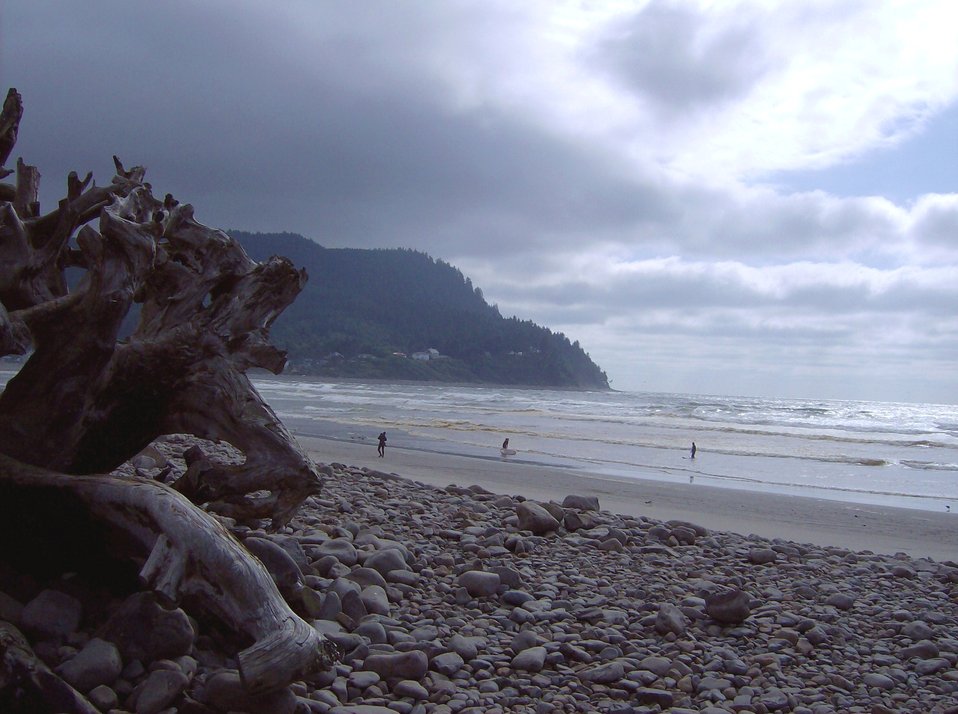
Driftwood, cobbles, surfers (crummy surf) and a beautiful headland at Seaside.